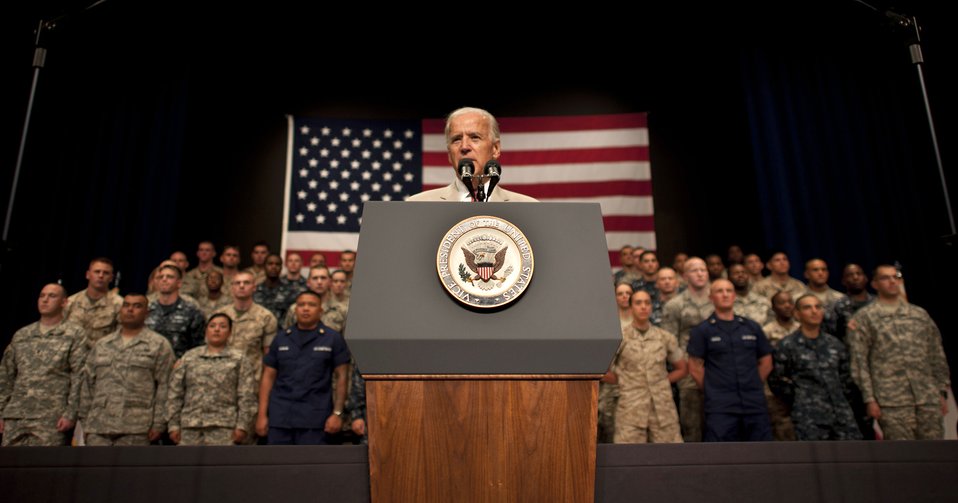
Vice President Biden Visits Yokota

Vice President Joe Biden speaks to service members Aug. 24, 2011, at Yokota Air Base, Japan. Biden met with key leaders during his nine-day tour through Asia to discuss a full range of bilateral, regional and international issues.